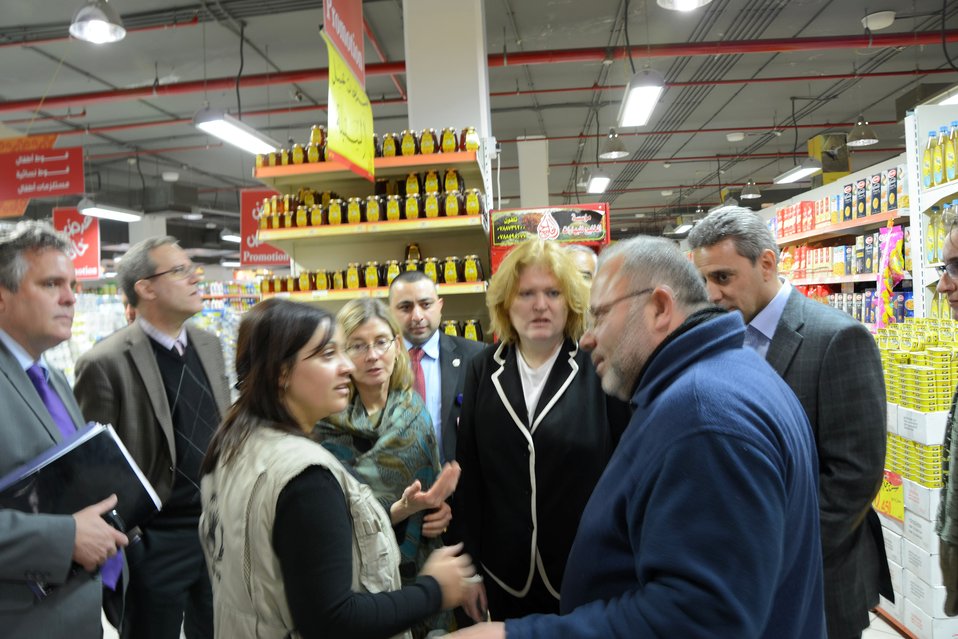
Assistant Secretary Richard and USAID Deputy Administrator Lindborg Visit a World Food Programme Distribution Center in Amman

Assistant Secretary of State for Population, Refugees, and Migration Anne C. Richard and USAID Assistant Administrator for Democracy, Conflict, and Humanitarian Assistance Nancy Lindborg visit a World Food Programme Distribution Center in Amman, Jordan, where refugees living in host communities receive vouchers on January 27, 2013. They can use these vouchers to shop for their families in local supermarkets.